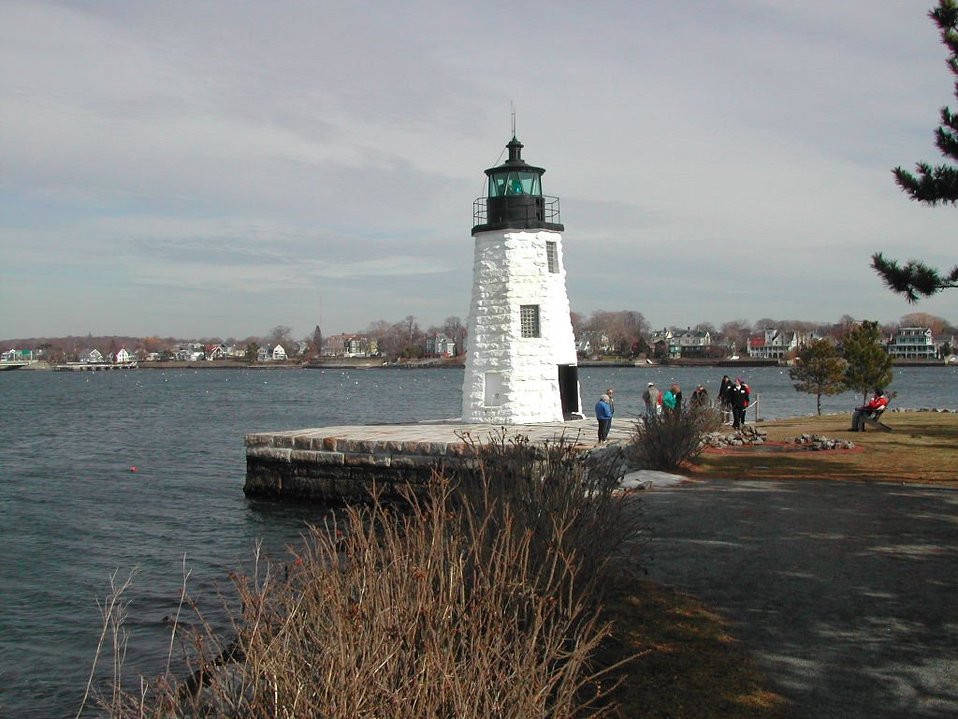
Goat Island Light